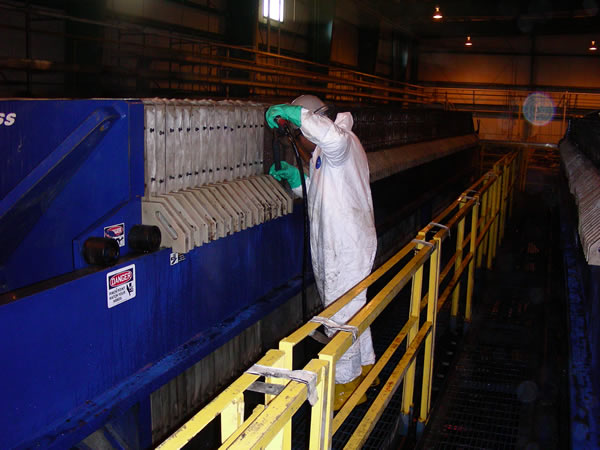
December 2009, washing the filter press cloths